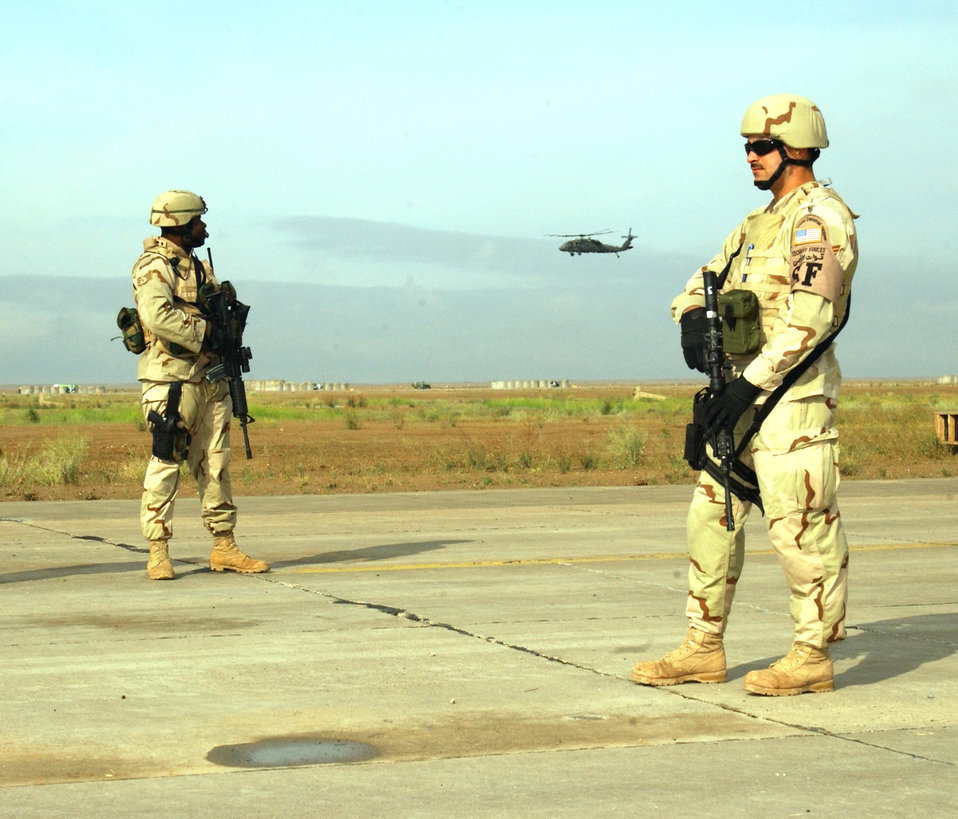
FAST Airmen fly thousands of miles to keep aircraft safe

Tech. Sgt. Lukas Parr (right) and Staff Sgt. Kenneth Gordon watch for potential security problems while their C-130 Hercules is on the ground. They are members of the 332nd Expeditionary Security Forces Squadron fly-away security team.